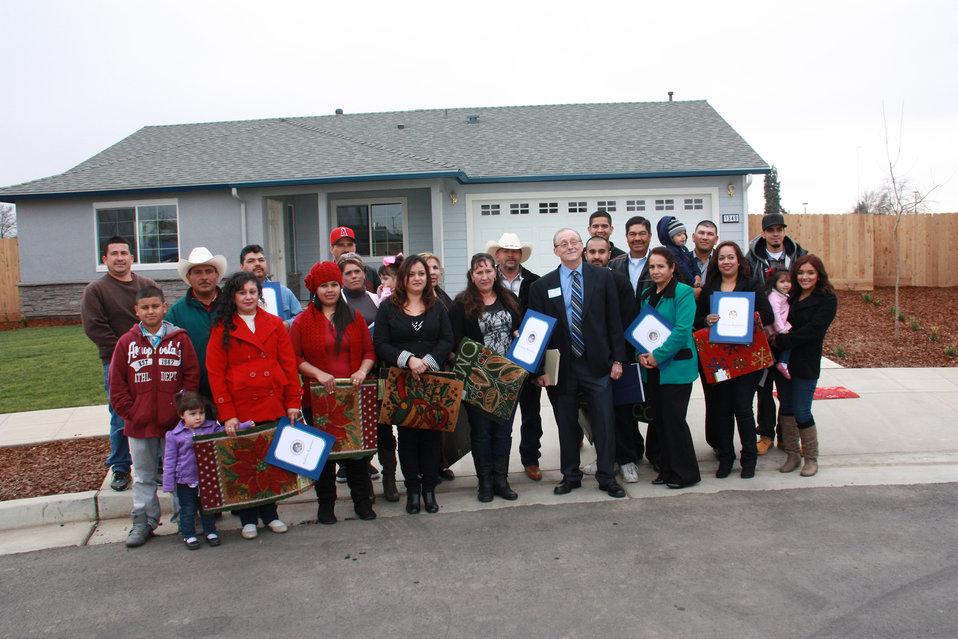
group

U.S. Department of Agriculture (USDA) California Rural Development Single Family Housing Program Director Ron Tackett joins 11 families in front of one of the homes they jointly built in Reedley, CA through USDA’s Mutual Self-Help Housing Loan program. The group worked with oversight from Self-Help Enterprises, a pioneer in the “Sweat Equity” concept that’s been helping Americans realize the dream of home ownership for nearly 50 years.